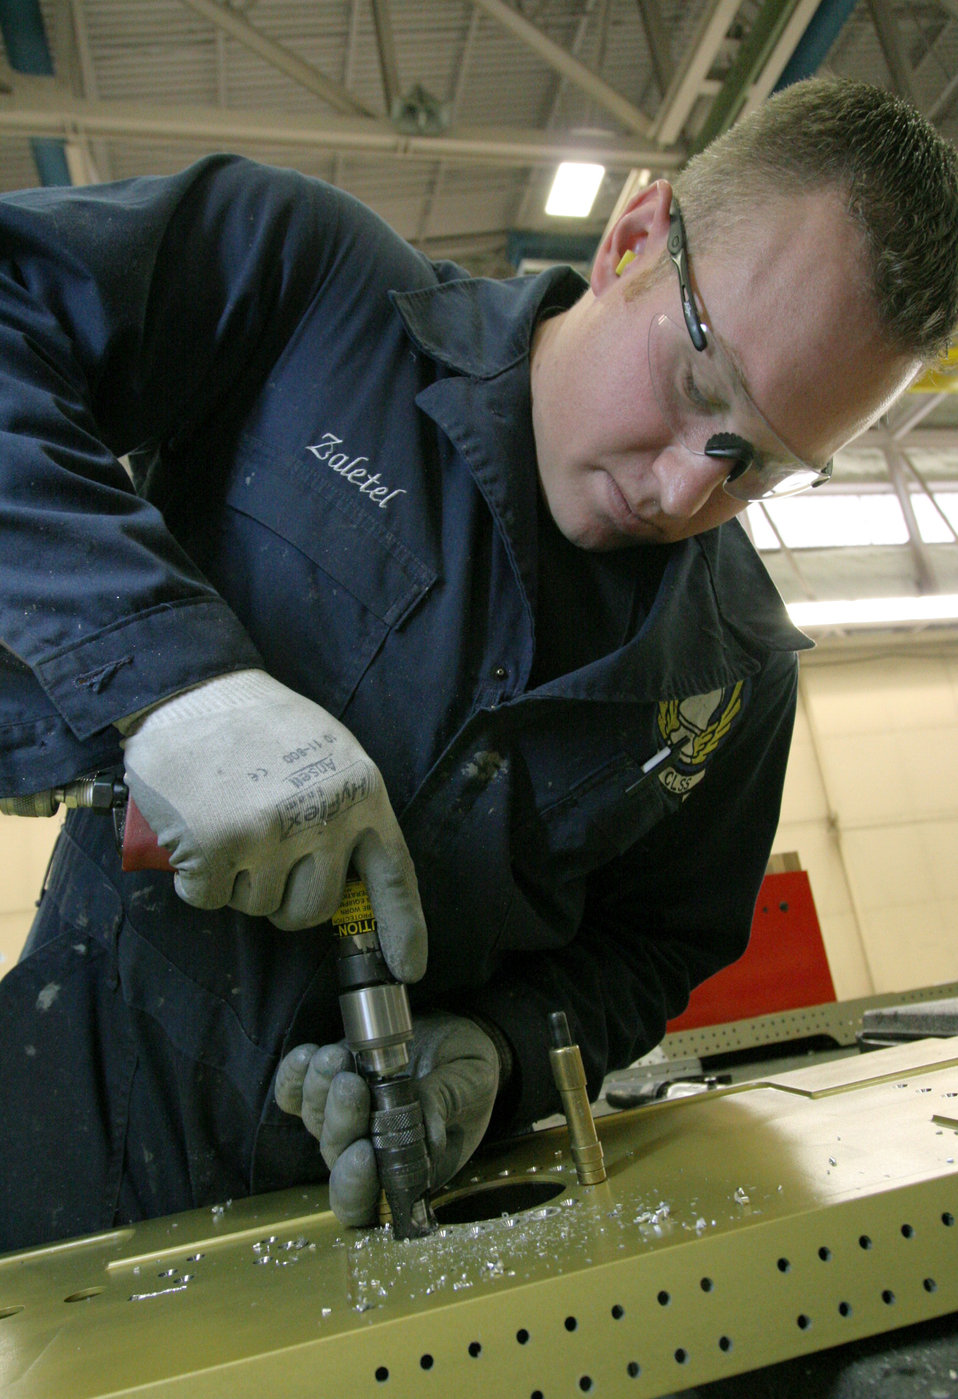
Falcon maintenance

HILL AIR FORCE BASE, Utah (AFPN) -- Staff Sgt. Albert Zaletel, a depot aircraft structural maintenance craftsman, prepares the closure beam -- where a wing attaches to an F-16 Fighting Falcon's fuselage -- for fuel spool manifold installation.